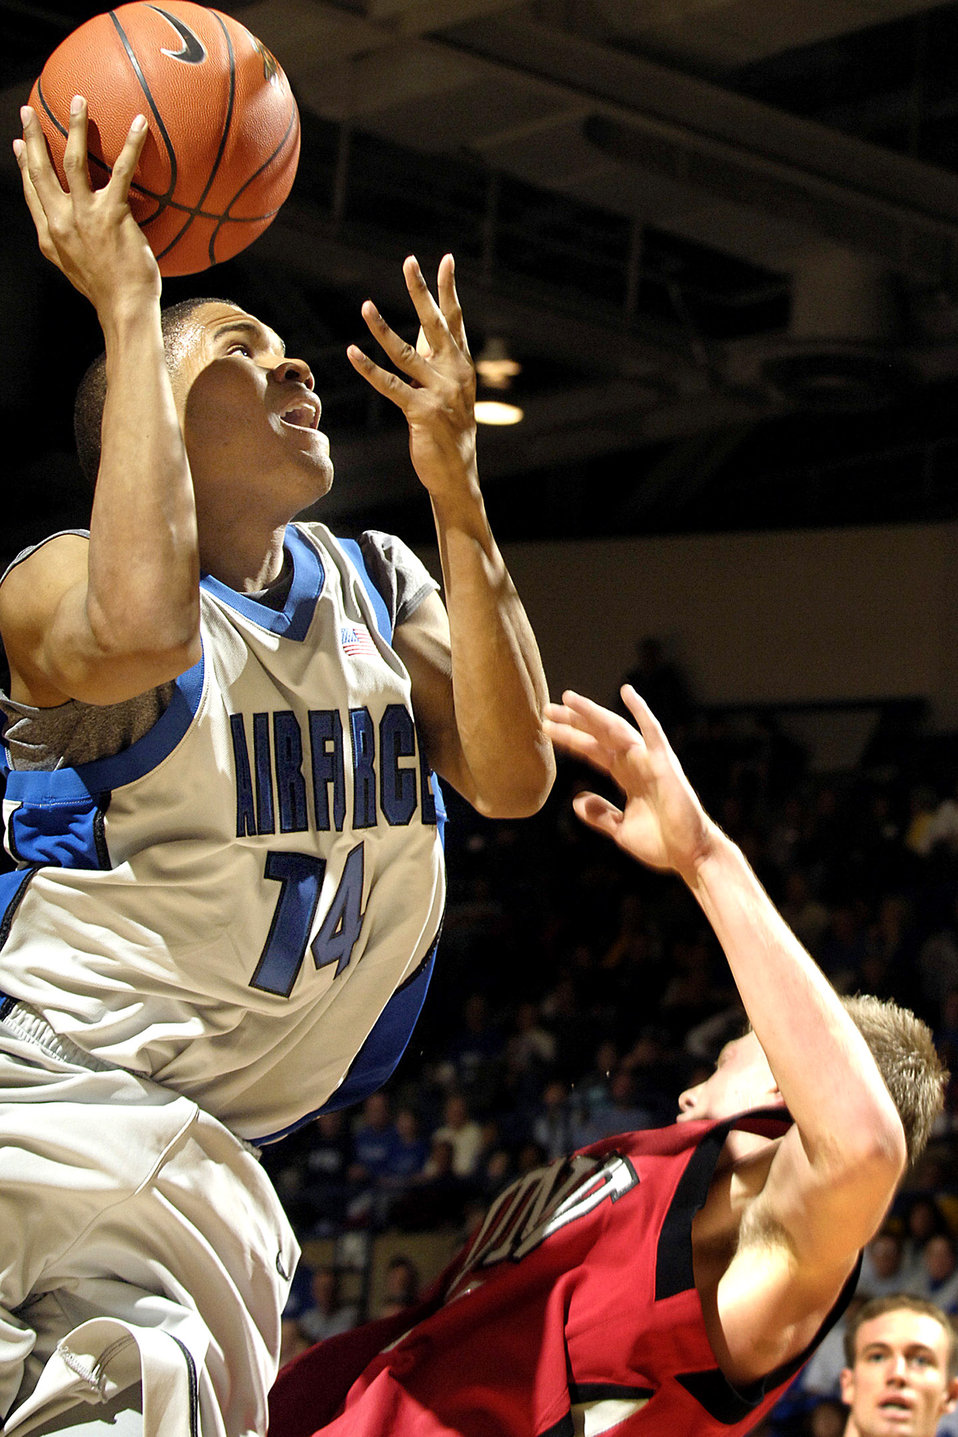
Academy defeats UNLV 65-53

U.S. Air Force Academy senior guard Adam Hood takes a shot over a defender as the Falcons beat the University of Nevada Las Vegas, 65-53, Jan. 13 in a Mountain West Conference game in Clune Arena at Colorado Springs, Colo.